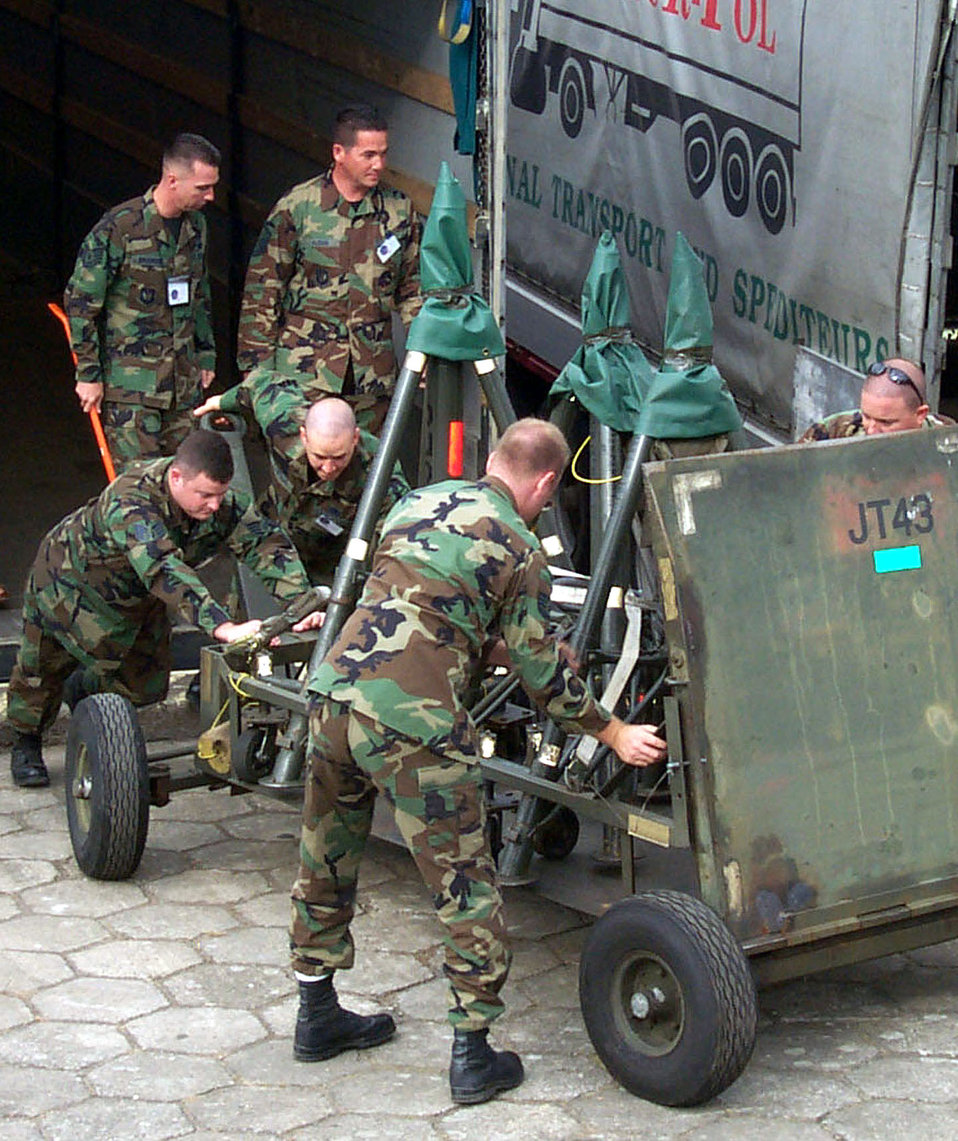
NATO Air Meet 2003

POZNAN AIR BASE, Poland -- Maintainers from the 52nd Fighter Wing at Spangdahlem Air Base, Germany, take jet tripod jacks off a transport truck Sept. 4. U.S. Air Force aircrews and support troops are in Poland for NATO Air Meet 2003, a major tactical live-flying exercise.